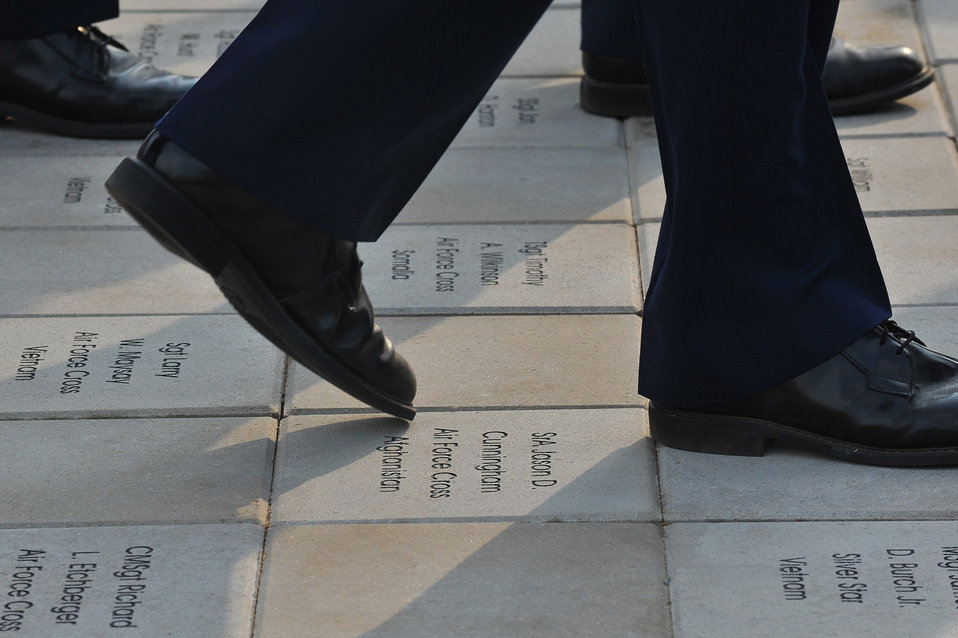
Graduation day

Basic trainees march on the parade grounds during their graduation ceremony May 1 at Lackland Air Force Base, Texas. The walkway has bricks dedicated to fallen Airmen.